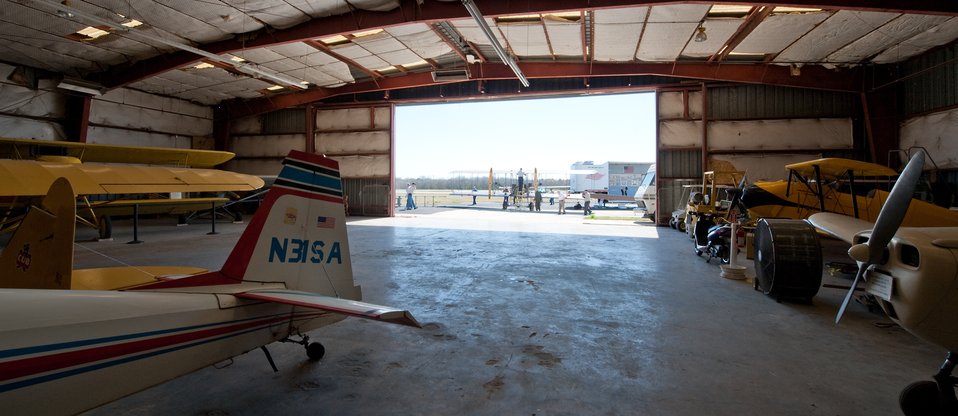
Wright